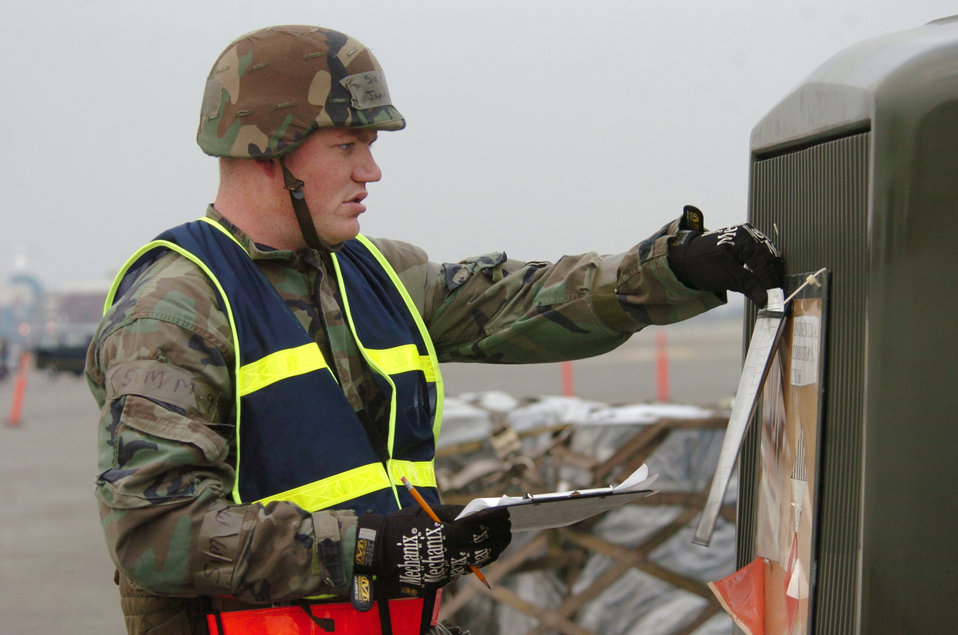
ORE you ready?

YOKOTA AIR BASE, Japan -- Senior AIrman James Avery ensures that a fuel truck has proper documentation during an operational readiness exercise here Nov. 8. The exercise tested the 374th Airlift Wing's command and control, operations and mission support functions. Airman Avery is assigned to the 374th Logistics Readiness Squadron.